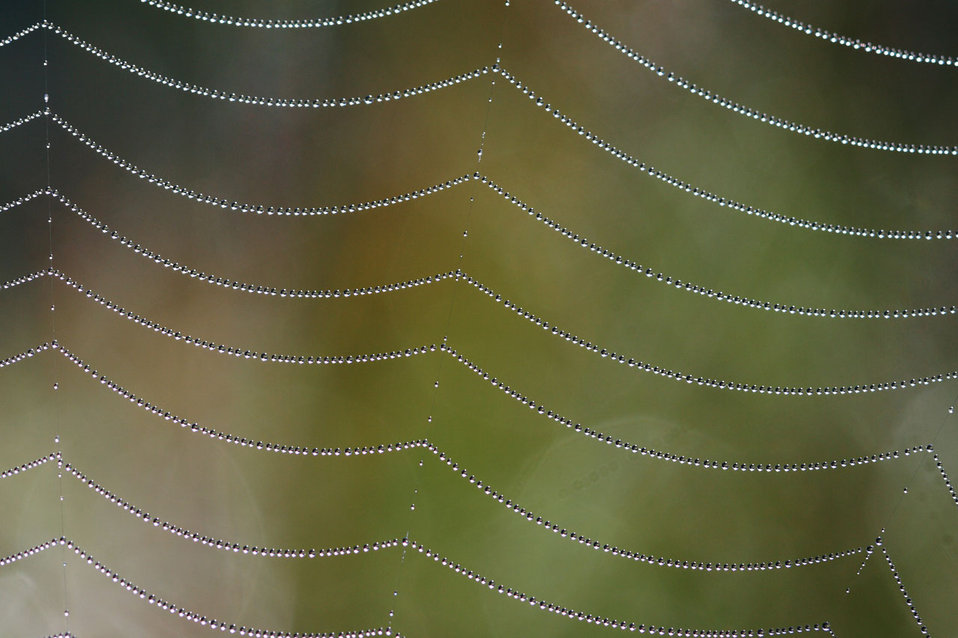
Spider net with dew

Spider net with drops of water.